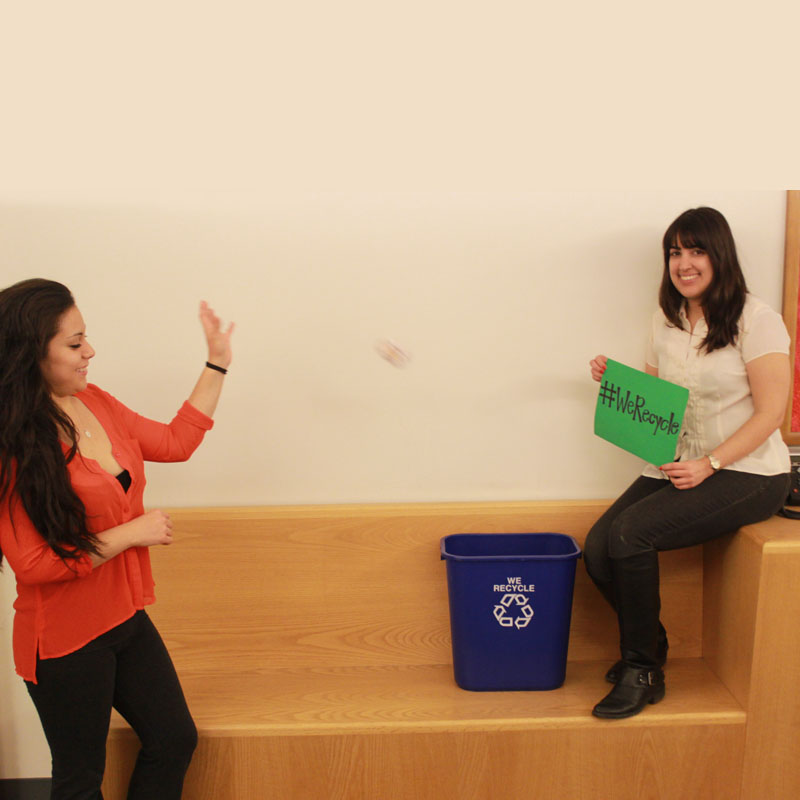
EPA Employees Athena and Denise Recycle

At EPA, #WeRecycle. Learn how you can too: www2.epa.gov/recycle